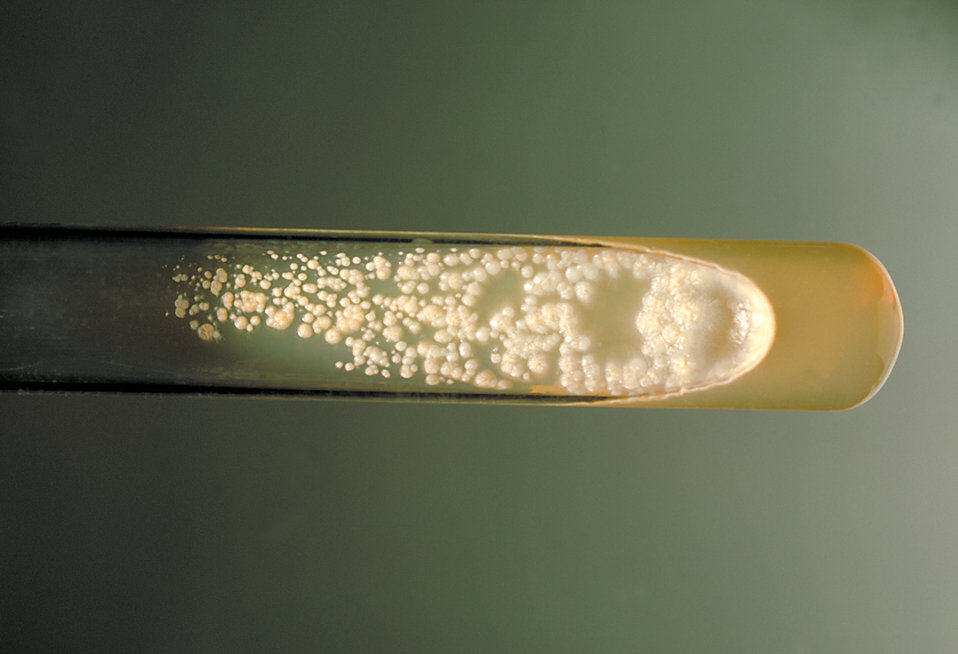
This is a SABHI agar slant culture of the fungus Geotrichum candidum grown at 37�C.